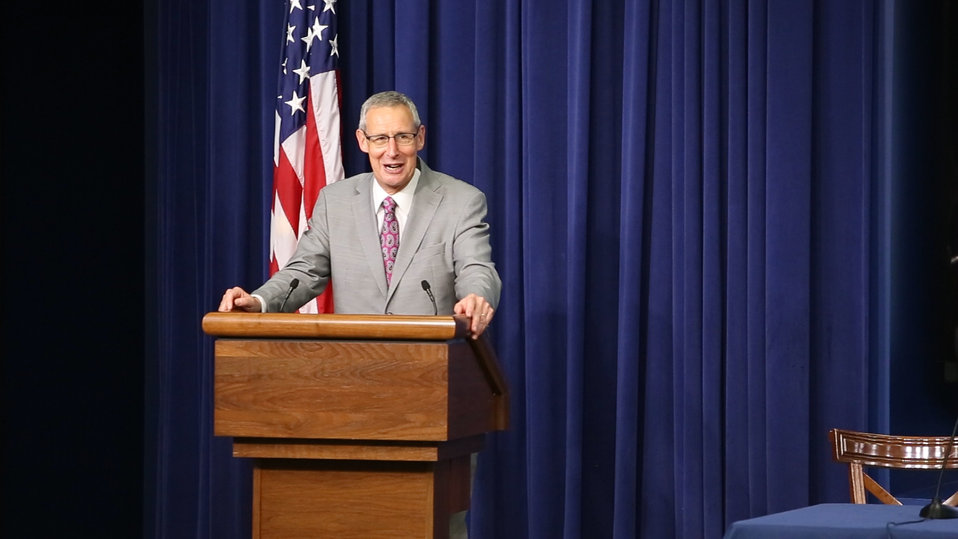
MVI 0179.MOV.Still002